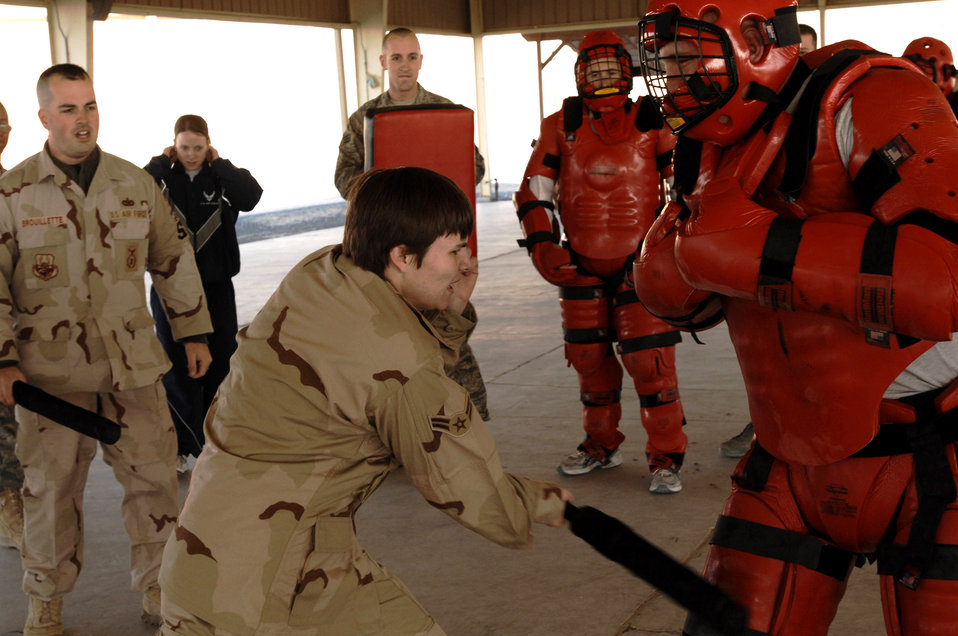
386th Force Protection Arimen self defense training

Airman 1st Class Amber Morton strikes Airman 1st Class Tyler Brunner Jan. 24 during self-defense tactics training with batons at an air base in Southwest Asia. The self-defense training familiarizes Airmen with how to use non-lethal force to defend themselves. Airmen Morton and Brunner are assigned to the 386th Expeditionary Security Forces Squadron and are deployed in support of Operation Iraqi Freedom.